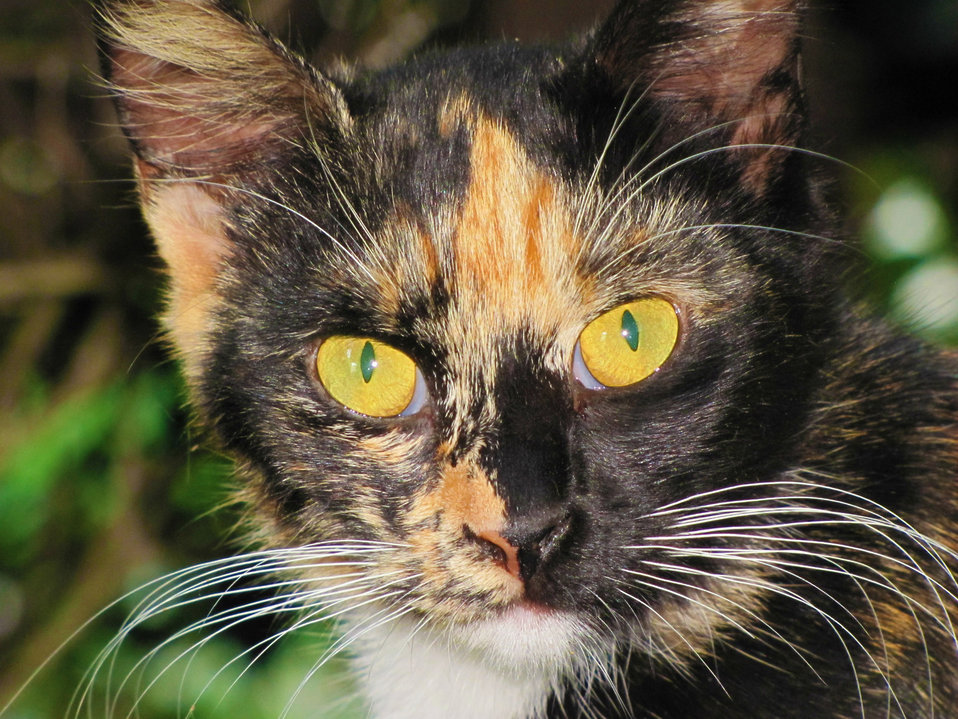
Cat,animal,orange.